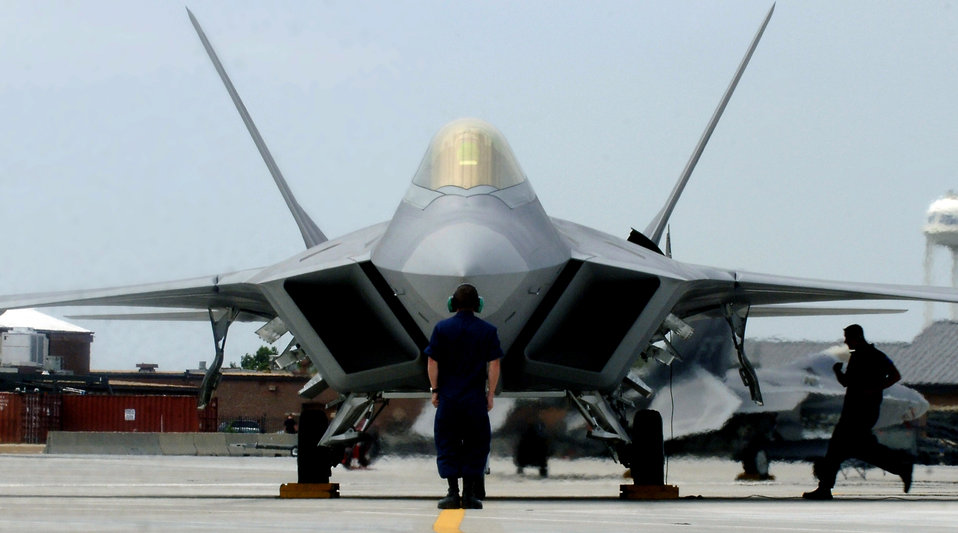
Demo Team

F-22A Raptor Demonstration Team aircraft maintainers prepare to launch out Maj. Paul